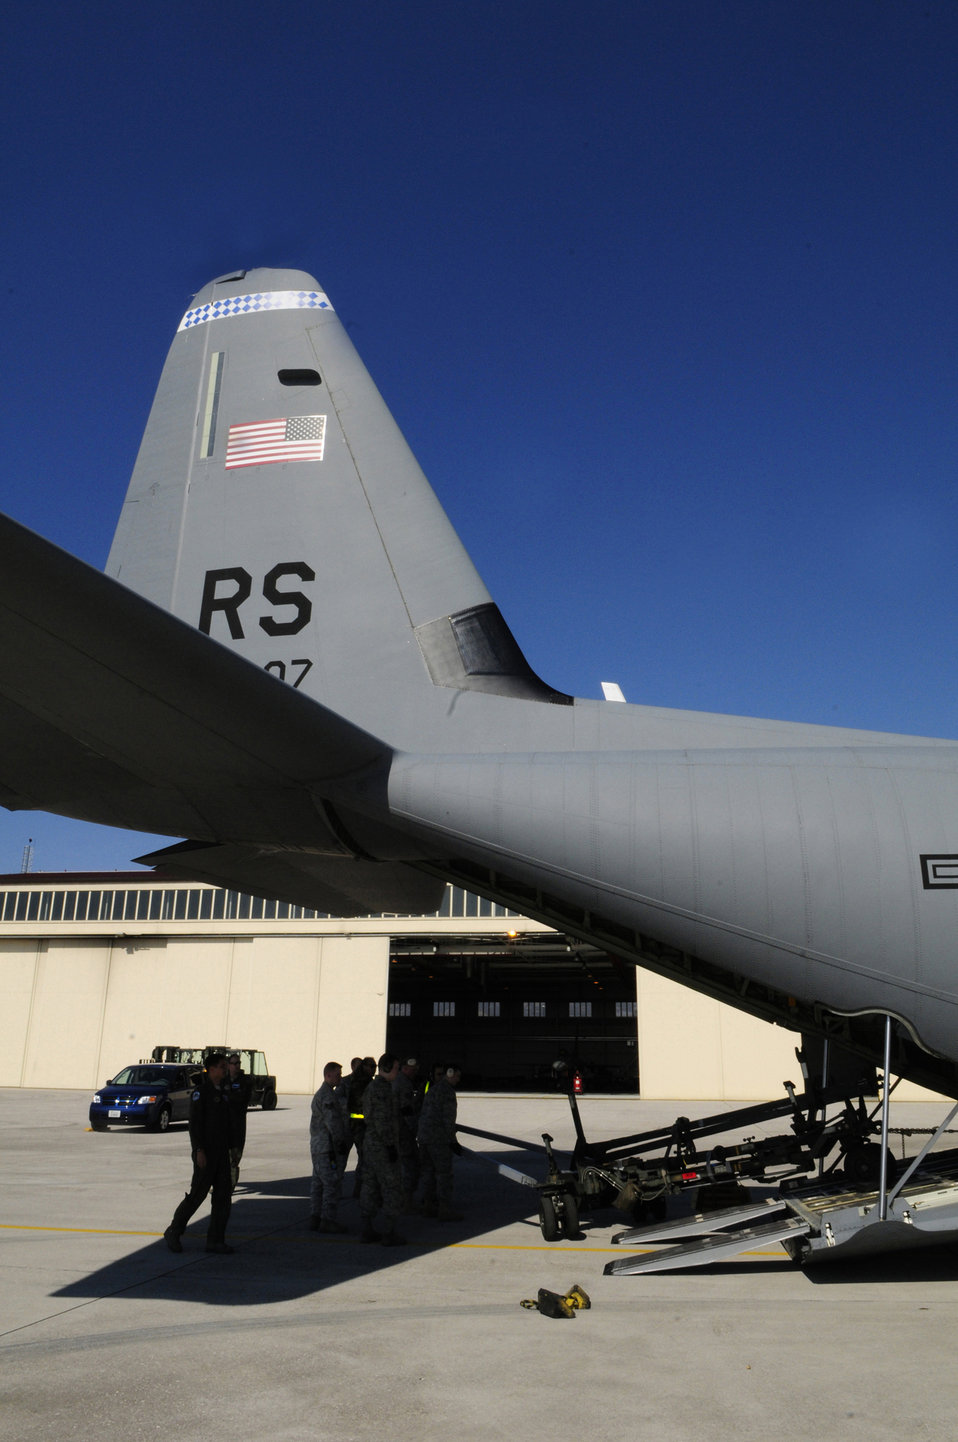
Odyssey Dawn

Airmen unload a U.S. Air Force C-130 Hercules arriving at Aviano Air Base, Italy from Ramstein AB, Germany March 21, 2011. The aircraft arrived carrying equipment and personnel to support Operation Odyssey Dawn. Joint Task Force Odyssey Dawn is the U.S. Africa Command task force established to support the larger international response to the unrest in Libya. A broad coalition of nations are partnering to enforce U.N. Security Council Resolution (UNSCR) 1973, which authorizes all necessary means to protect civilians in Libya under threat of attack by Qadhafi regime forces. JTF Odyssey Dawn is commanded by Admiral Samuel J. Locklear, III.